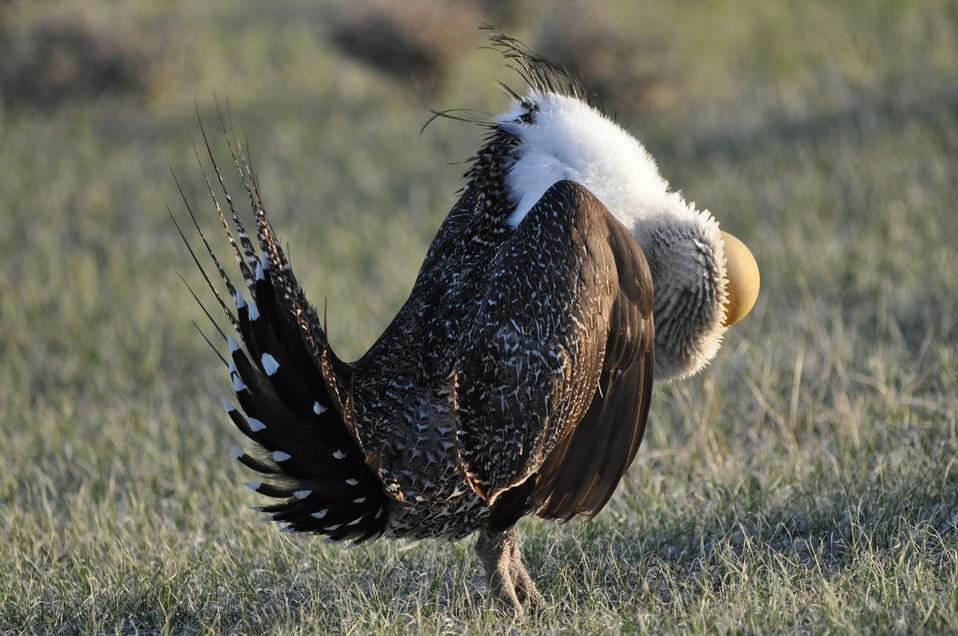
Greater Sage-Grouse

Photo Credit: Jeannie Stafford/USFWS
A greater sage-grouse male struts at a lek (dancing or mating ground) near Bridgeport, CA to attract a mate.